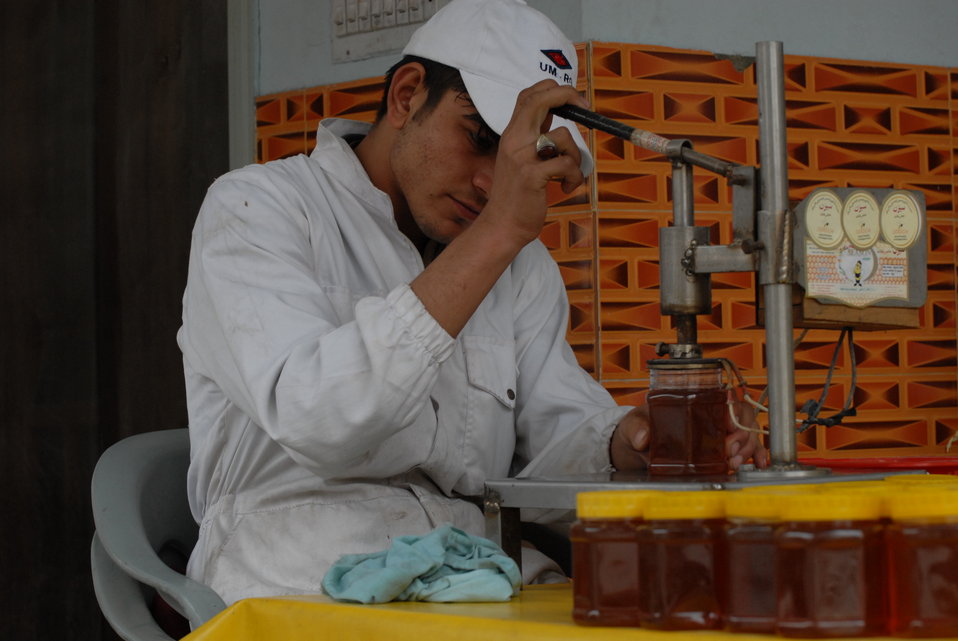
'On the Road' in Nangarhar Province